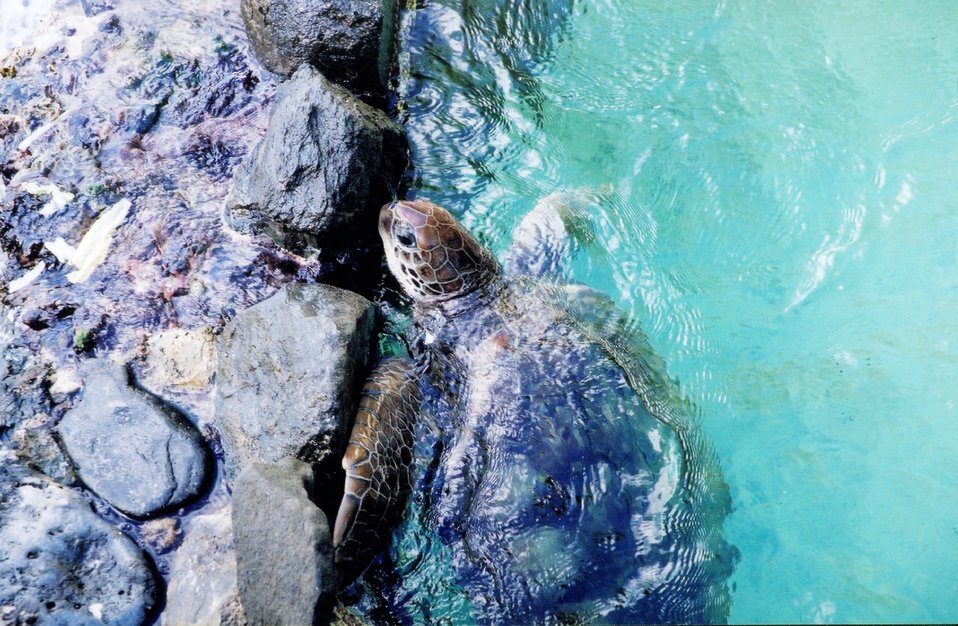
The turtle pool at Coral World